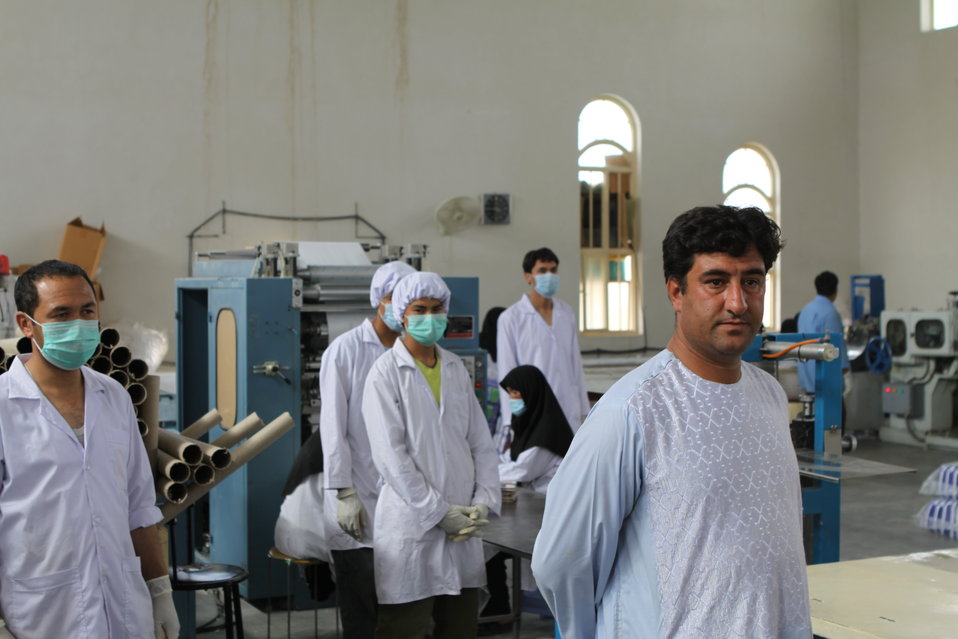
100525 Hirat Marble Conference 797